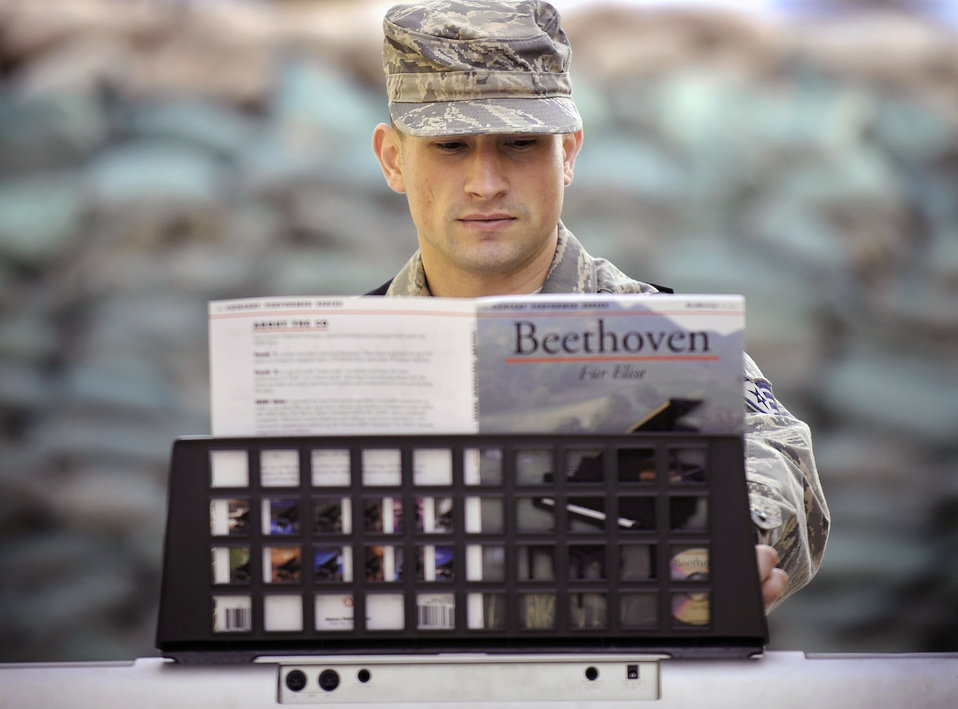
NCO brings calm over camp

Staff Sgt. Eric Began, a member of the Paktya Provincial Reconstruction Team, relaxes at Forward Operating Base Gardez by playing the piano. Sergeant Began taught himself how to play the keyboard as a way to pass time during his deployment to Afghanistan.